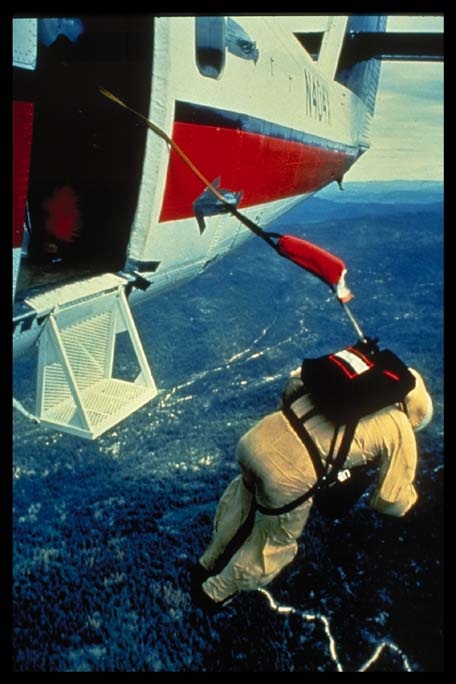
Smokejumper